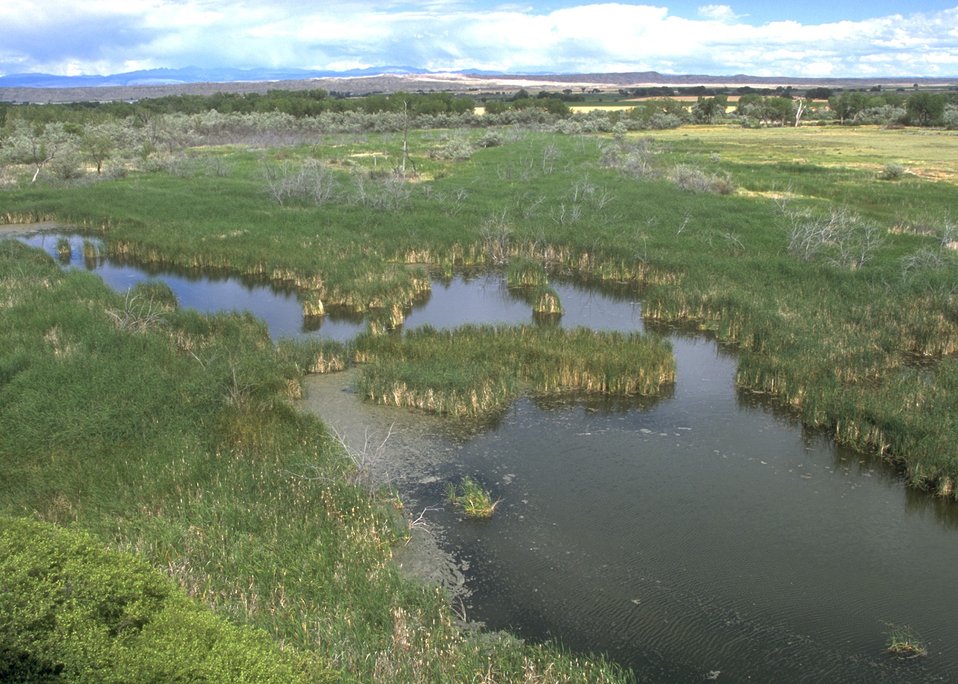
Duck Swamp Interpretive Area, Worland Field Office.